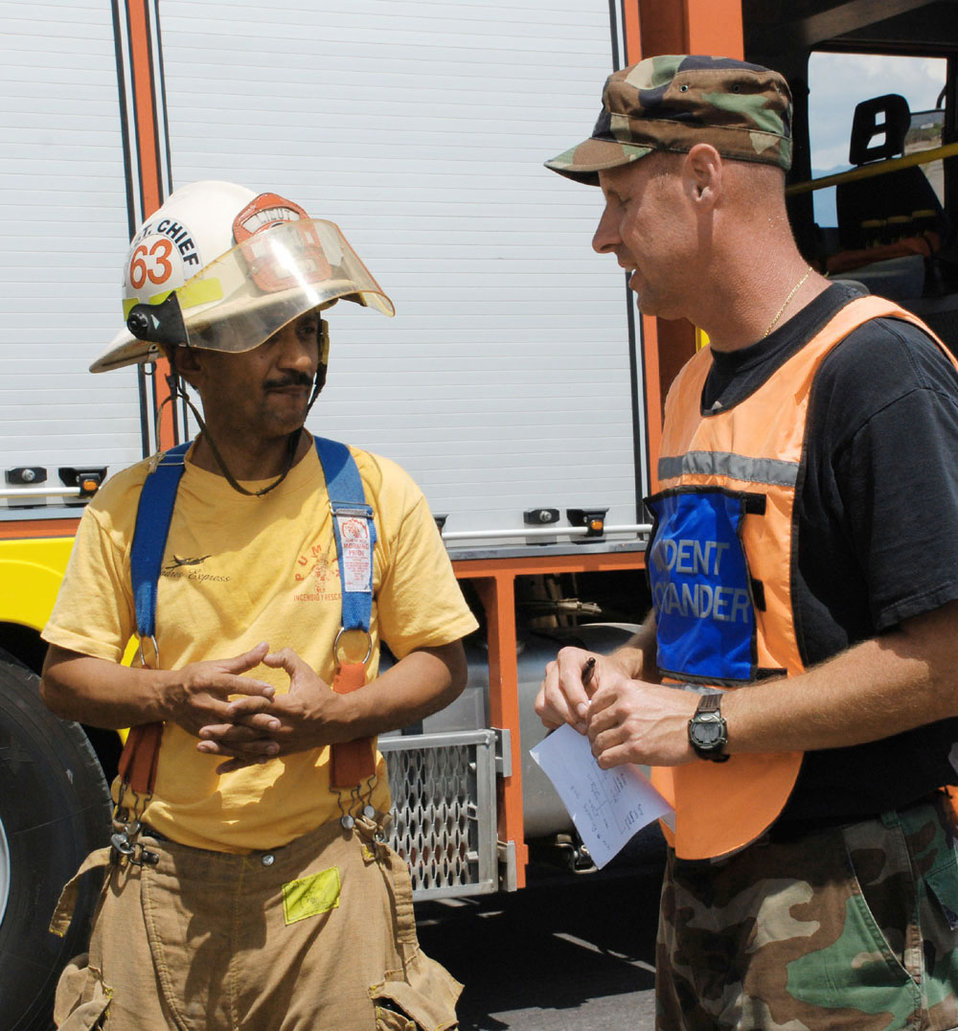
American servicemembers respond to overturned fuel tanker

Master Sgt. Pat Miller consults with Comayagua Deputy Fire Chief Lt. Jorge Turcias on a plan to safely recover an overturned fuel truck March 13 8 kilometers north of Soto Cano Air Base, Honduras. The truck overturned approximately 8 kilometers north of the base after hitting a horse around 8 a.m. Sergeant Miller is a Joint Task Force-Bravo firefighter stationed at Soto Cano AB.